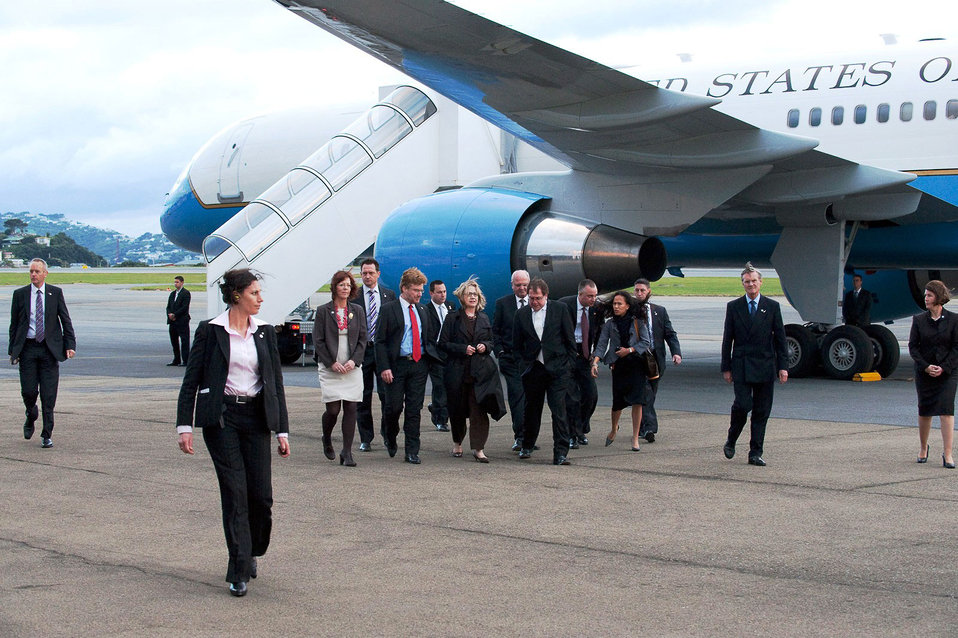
Secretary Clinton Arrives in Wellington, New Zealand

U.S. Secretary of State Hillary Rodham Clinton walks with the Mayor of Wellington, Celia Wade-Brown (far left); U.S. Ambassador to New Zealand David Huebner (left of the Secretary); and New Zealand Foreign Minister Murray McCully (right of the Secretary) after landing in Wellington, New Zealand, on November 3, 2010.